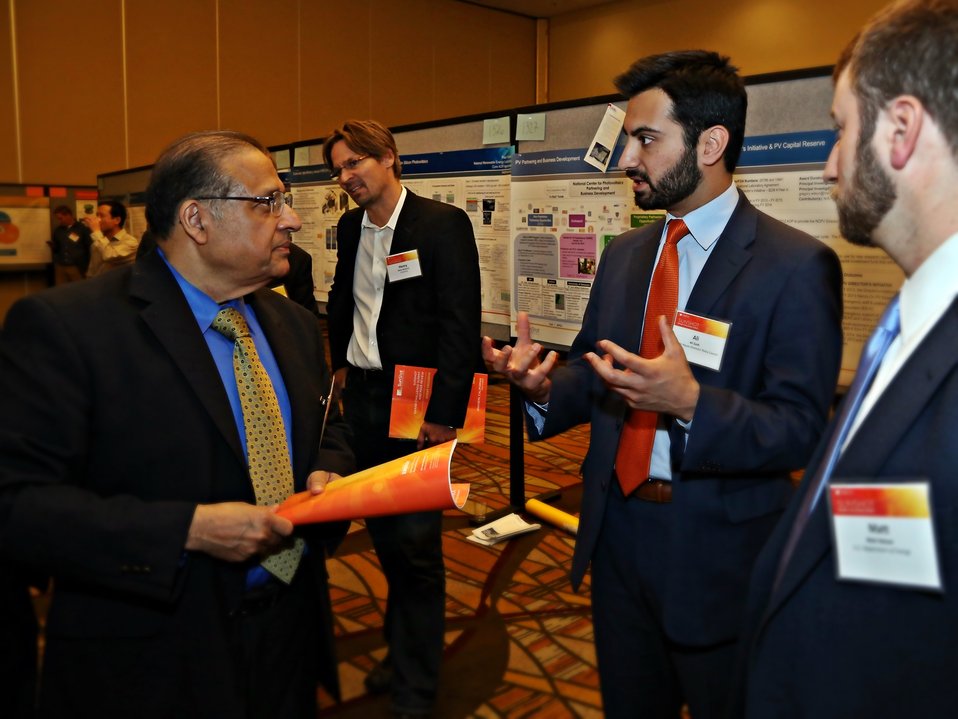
VIP Walkthough 4

Ali Zaidi, Deputy Director for Energy Policy, The White House Domestic Policy Council chatting with attendees in the tech forum.